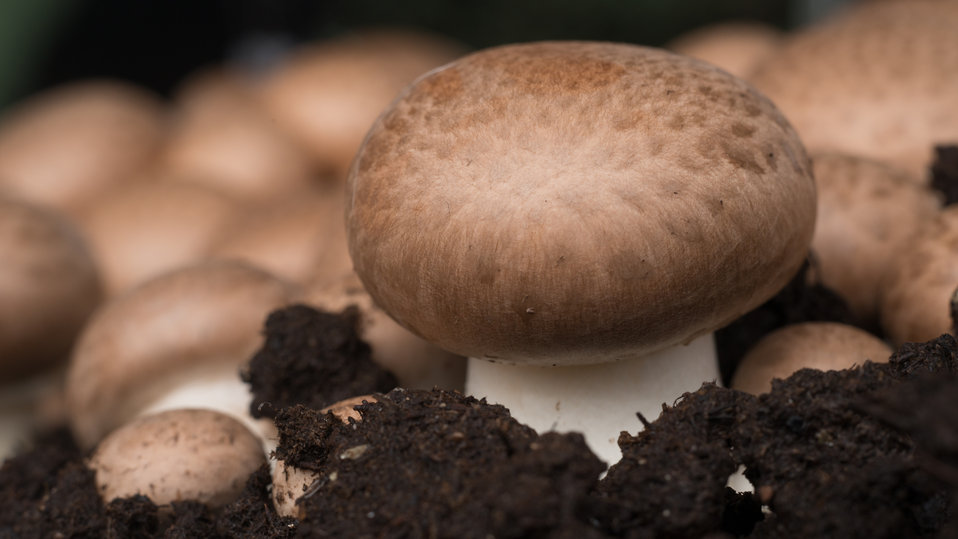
Crimini mushrooms in a growing medium on display at the U.S. Department of Agriculture (USDA) farmers markets and Harvest Festival at the USDA Whitten Building east parking lot in Washington, DC, on Friday, November 22, 2013.